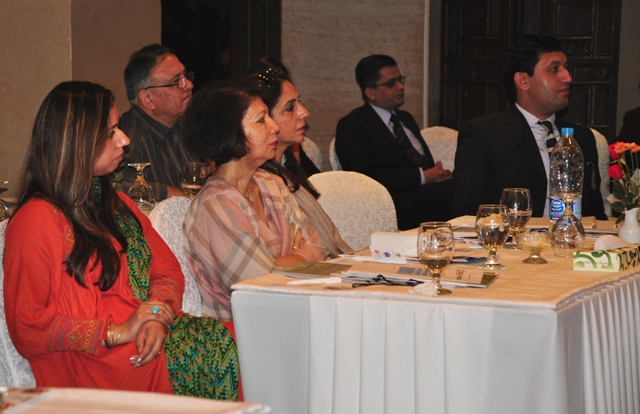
Education Workshop 144